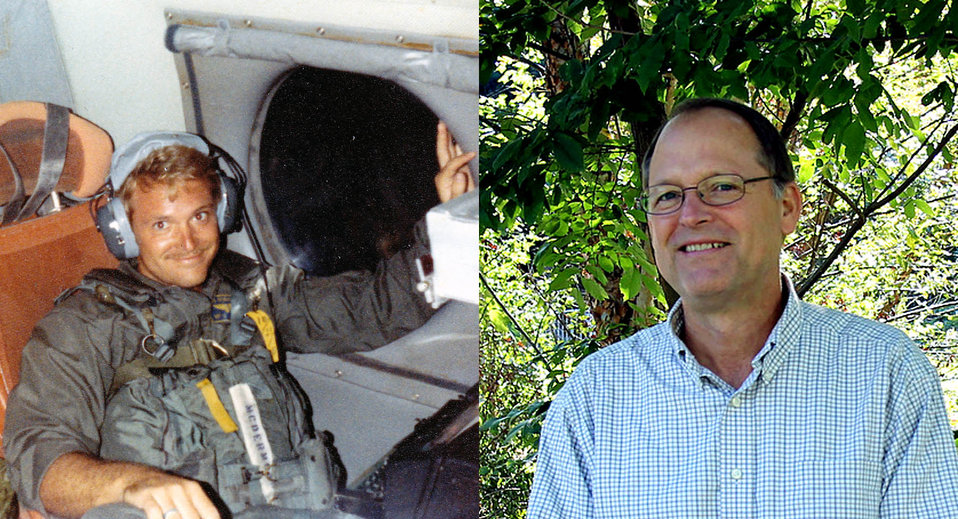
Ken McDermond.
.
Ken McDermond is the Coordinator for the South Atlantic Landscape Conservation Cooperative. Ken served in the U.S. Navy from 1976-1980. He was stationed at some great duty stations including Corpus Christi, TX, and Barbers Pt. HI. .
.
Working as an aircrewmen, he was fortunate to venture to a variety of locations in the Pacific, including Guam, Philippines, Japan, Okinawa, Tahiti, Kwajalein, and Midway. .
.
During the last two years of his enlistment, Ken was an airborne communicator in a P-3 Orion aircraft squadron. In addition to supporting the P-3s main tactical mission of monitoring positions of Soviet submarines, Ken's squadron conducted search and rescue missions. A particular focus of these missions was in Southeast Asia, post Vietnam conflict, when refugees were fleeing via ramshackle boats. Ken completed his enlistment as a Petty Officer second class.